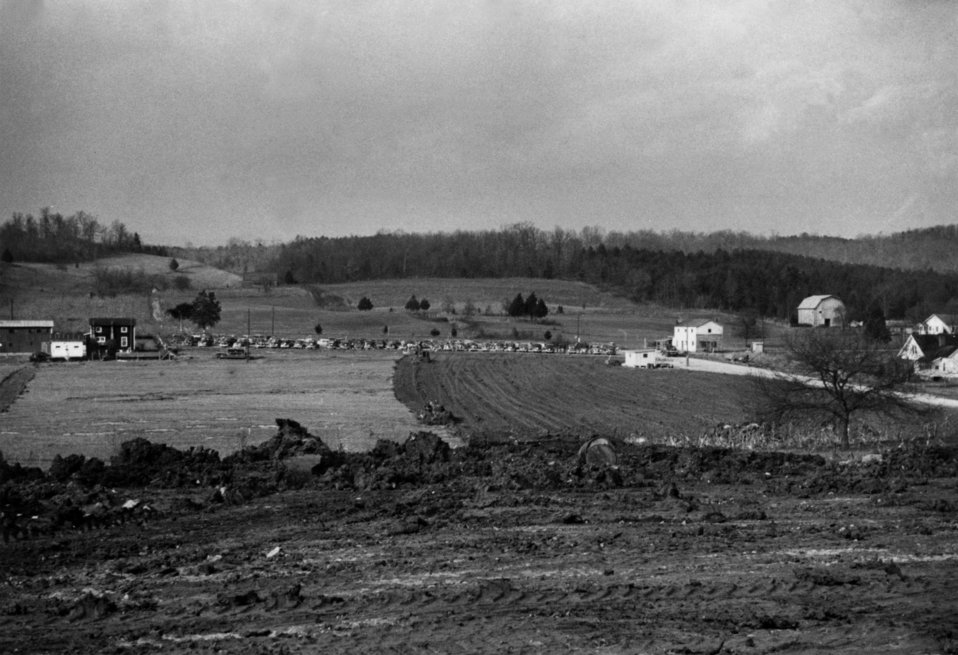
Grading for parking lot, AEC adm bldg

I-29 DOE photo Ed Westcott 12/12/42
Oak Ridge Tennessee